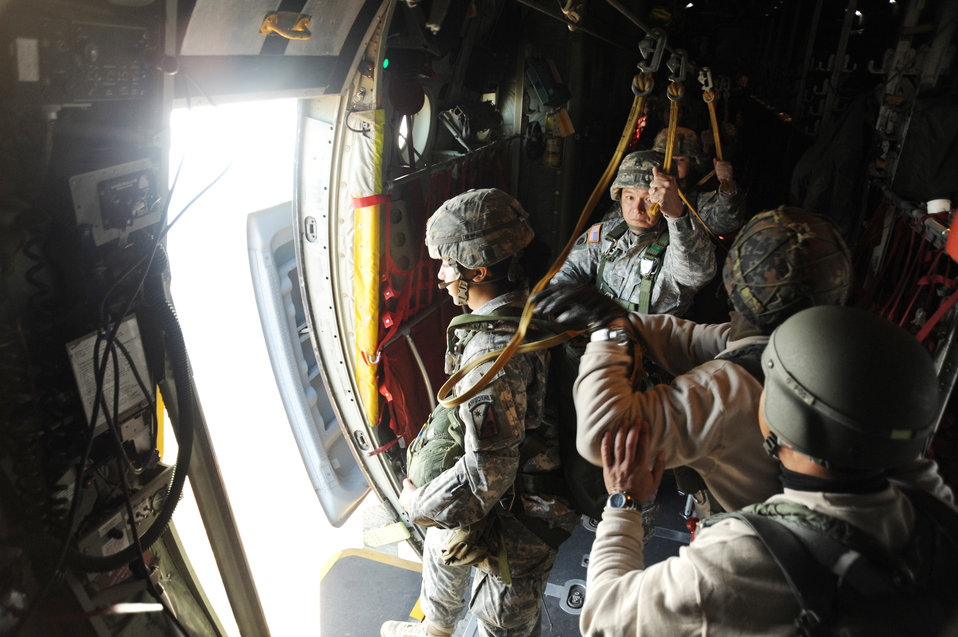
Everybody knows that Santa is a paratrooper

The first paratrooper to jump waits for the